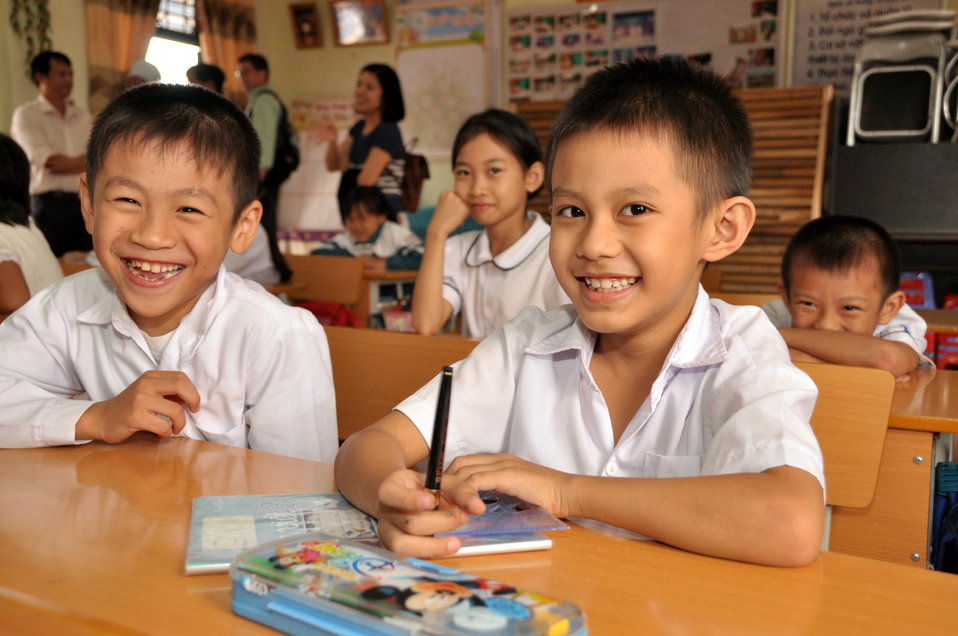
School children receive a dose of deworming medicine in Dien Bien